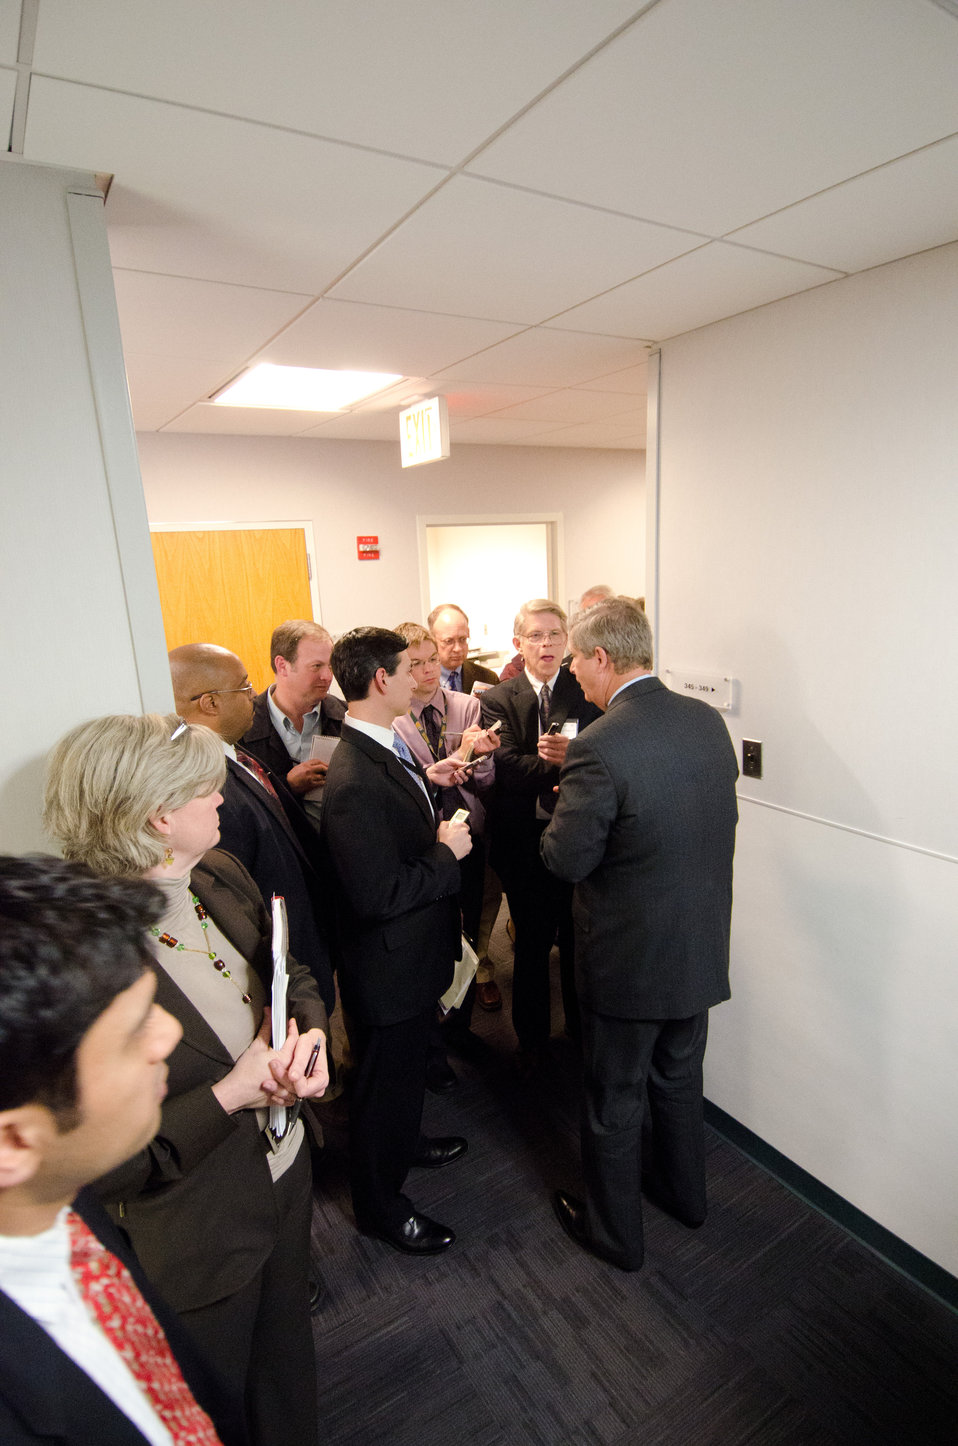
U.S. Department of Agriculture Secretary Tom Vilsack spoke at the Organic Trade Association’s, sold out 2011 Policy Conference and Hill Visit Days on Wednesday, April 6, 2011 in Washington, DC.